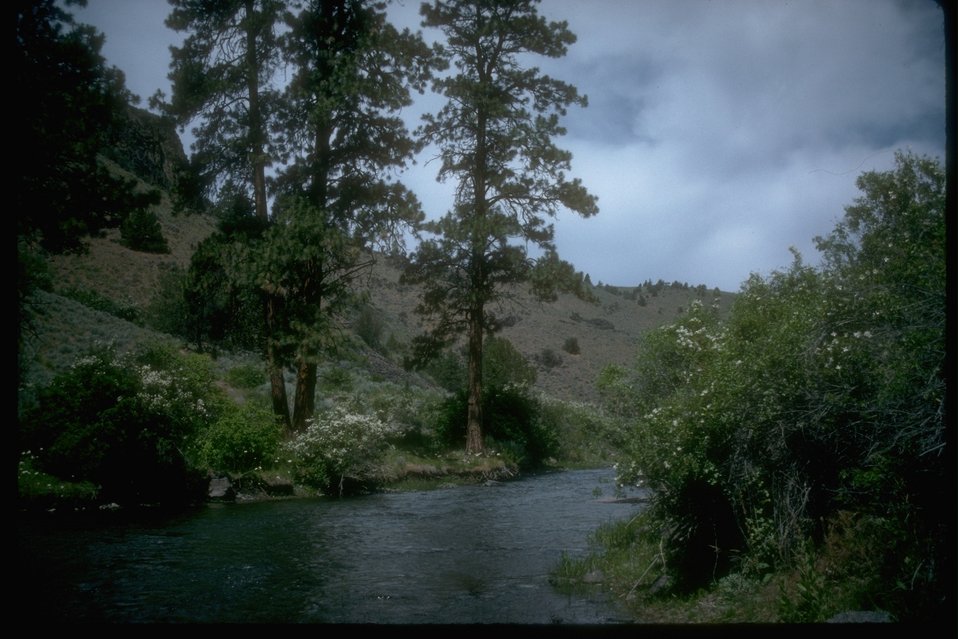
Scenic view of the North Fork of the Malheur River.